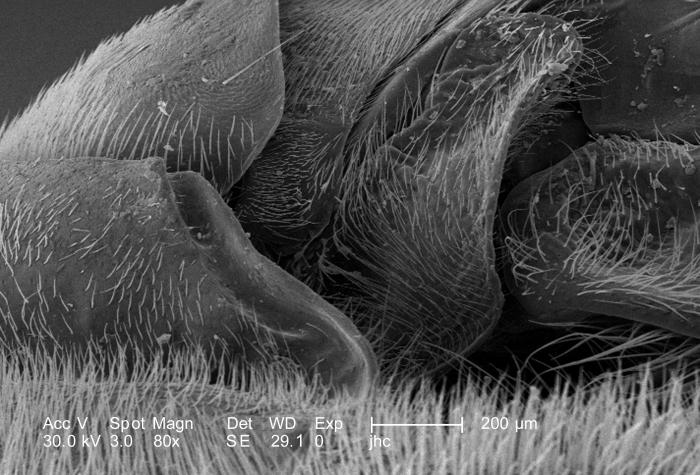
Under a magnification of 80X, approximately twice that of PHIL 10103, this scanning electron micrograph (SEM) depicted the exoskeletal region where this unidentified hornet's right forewing was attached to its thorax. This insect was discovered in the suburbs of Decatur, Georgia. This hornet was a member of the Phylum Arthropoda, i.e., Arthro = jointed, and poda = legs, and the class Insecta, for it possessed three pairs of these jointed extremities. Note the hair-like 'setae', seen here adorning the insect's thorax and membranous wings, which provided the hornet with data indicative of changes encountered in its environment such as chemical, thermal, and tactile queues.